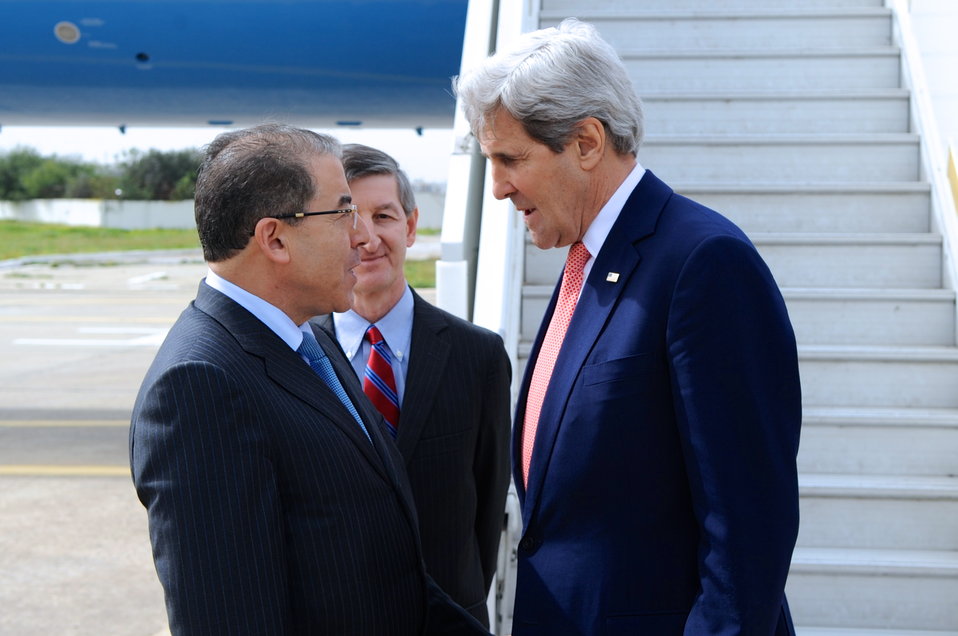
Tunisian Foreign Minister Hamdi Greets Secretary Kerry Upon Arrival in Tunis

Tunisian Foreign Minister Mongi Hamdi greets U.S. Secretary of State John Kerry upon his arrival in Tunis on Feb. 18, 2014.